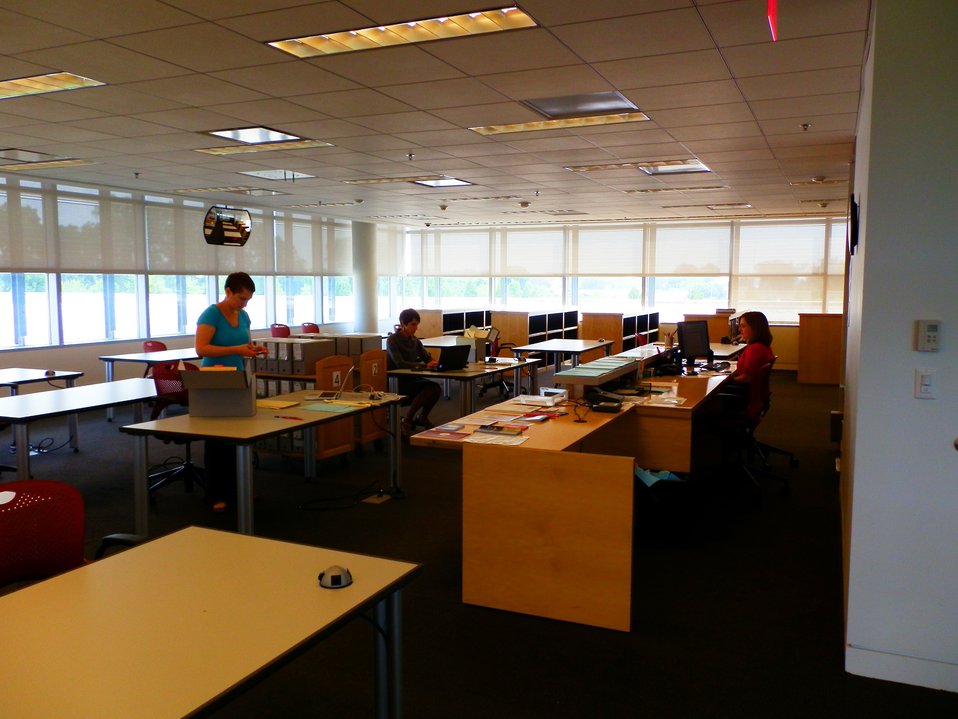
Archivist Kara Ellis observing researchers in the library's research room; Location: Clinton Library, Little Rock, AR